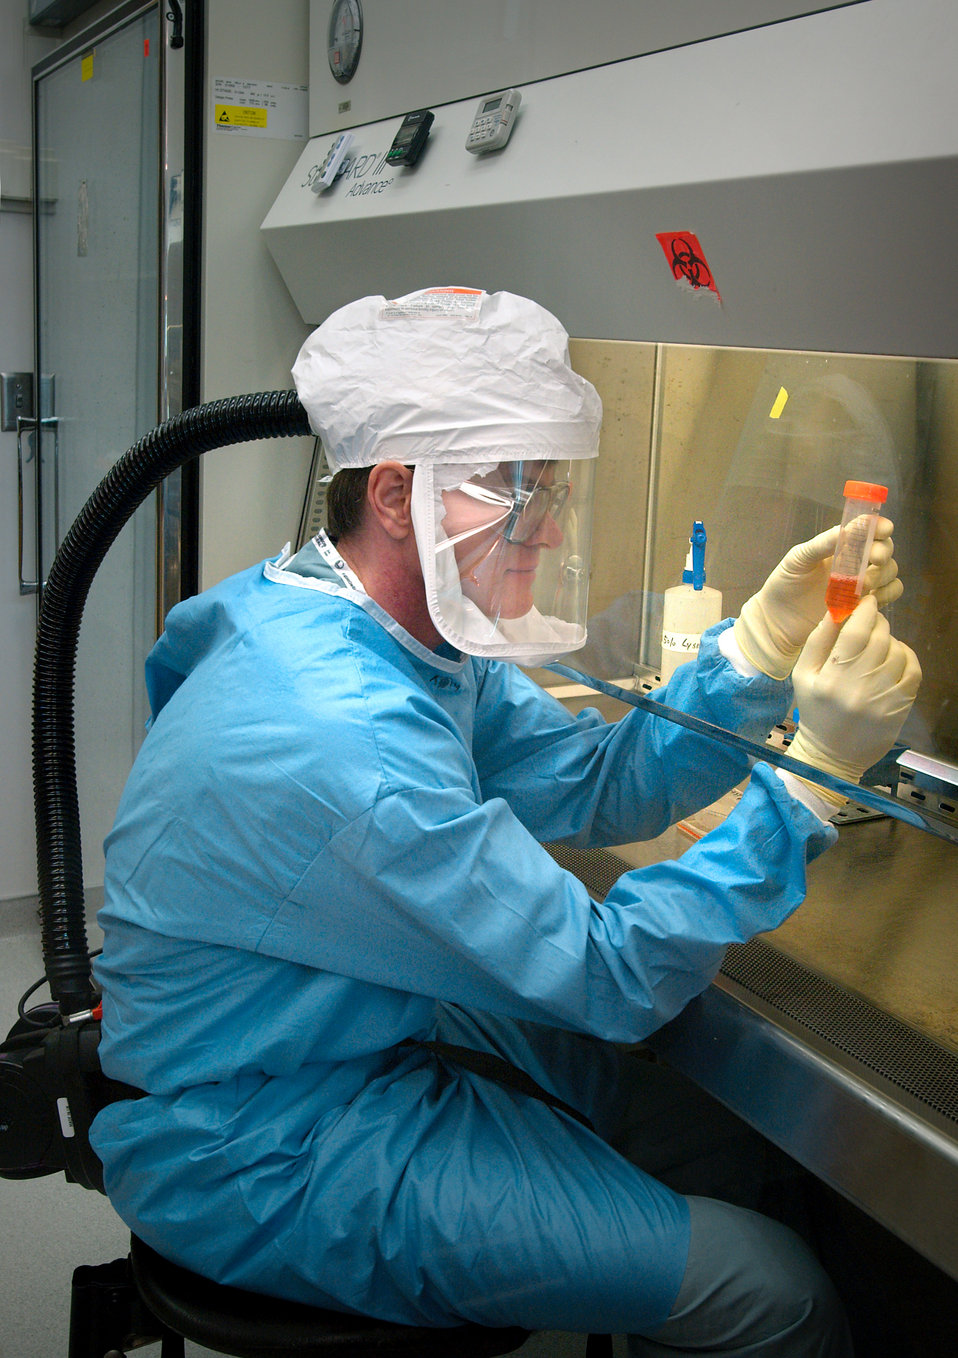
This 2005 photograph depicts one of the Centers for Disease Control's (CDC) staff microbiologists using an electronic pipetter to extract reconstructed 1918 Pandemic Influenza Virus from a calibrated vial containing a supernatant culture medium. The image was captured in a Biosafety Level 3-enhanced laboratory setting, where this scientist was working beneath a flow hood, whereupon, air outside the hood is pulled into the hood's confines and is then filtered of any pathogens before being re-circulated inside the self-contained laboratory atmosphere.